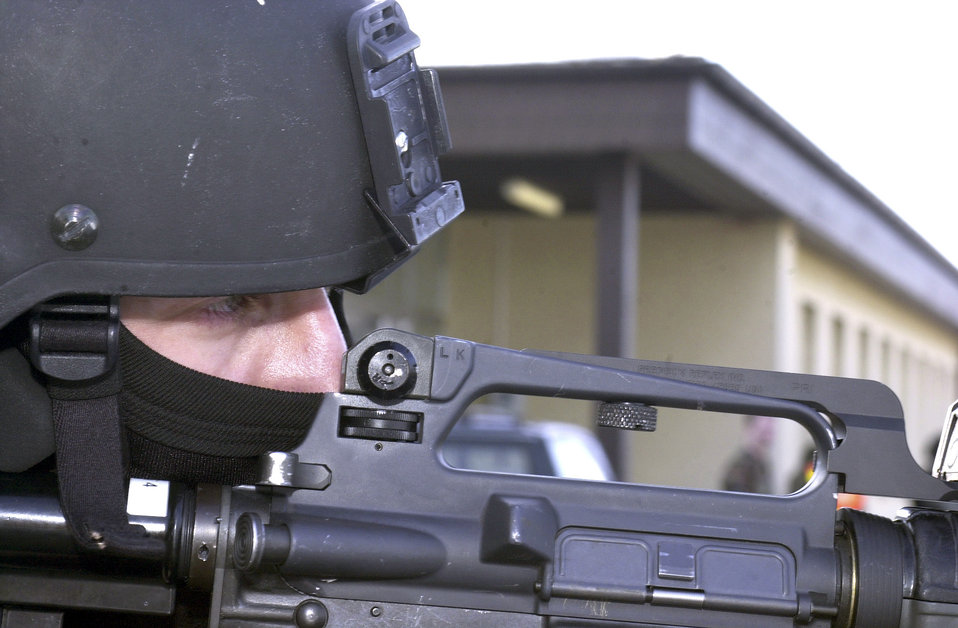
Take aim

SPANGDAHLEM AIR BASE, Germany -- A member of the 52nd Security Forces Squadron emergency service team takes aim at a suspect who attempted to take his commander hostage during a Full Spectrum Threat Response Exercise here Feb. 26. The exercise was designed to simulate how the 52nd Fighter Wing would actually handle a real-world hostage situation, and helped ensure both the precautions and safety measures would be followed.